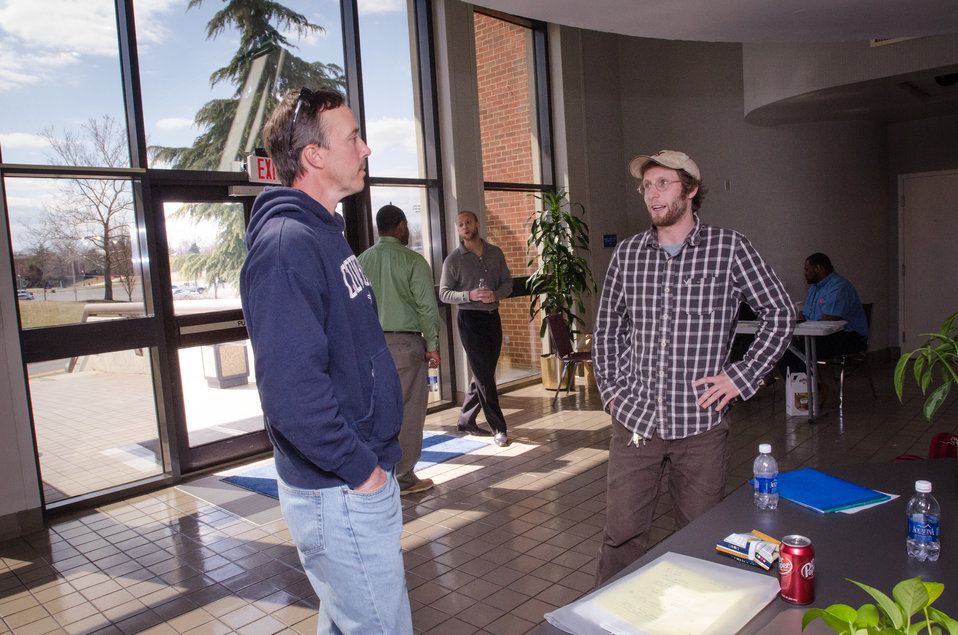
Farmers were able to network during lunchtime at the “Virginia State University (VSU), U.S. Department of Agriculture (USDA) and Virginia Farmers Working Together” outreach workshop in the VSU, L. Douglas Wilder building on Thursday, March 7, 2013, in Petersburg, VA. Farmers shared and learned new ways to do more with their current assets and capabilities, and ways to grow their businesses and apply for new assets.